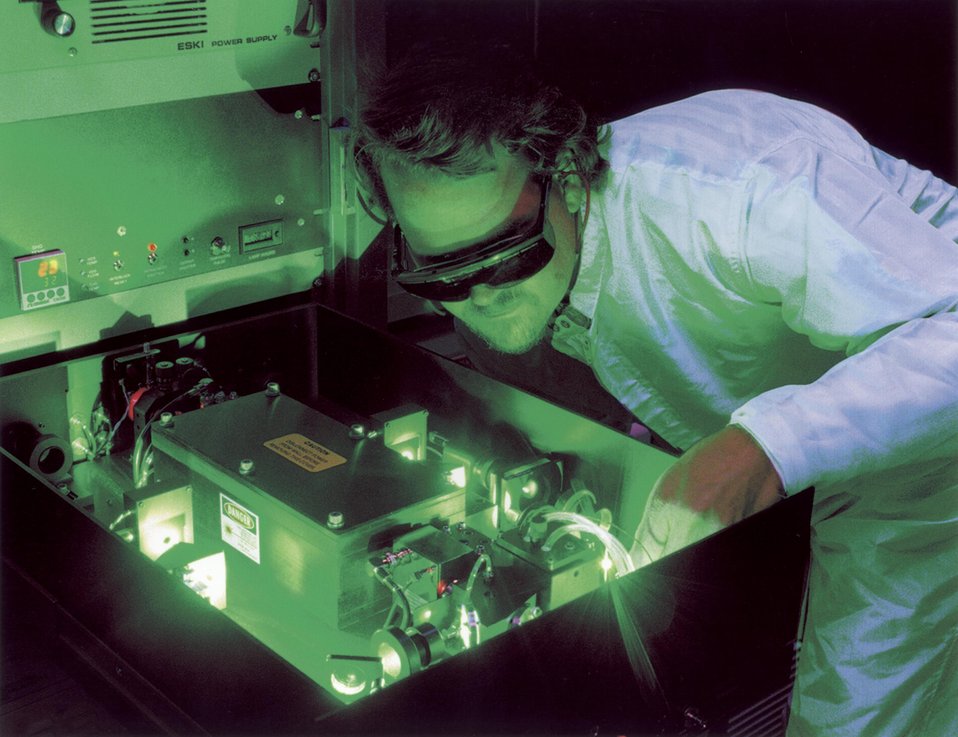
THE INTRODUCTION OF SOLID STATE LASERS ENERGIZE THE DYE LASERS WITH GREEN LIGHT.

A DESIRED ISOTOPE OF A CHEMICAL ELEMENT MUST BE SEPARATED FROM THE REMAINING ISOTOPES, FOR USES RANGING FROM MEDICINE TO ENERGY TO WEAPONS APPLICATIONS. LLNL DEVELOPED AN EFFICIENT TECHNIQUE CALLED ATOMIC VAPOR LASER ISOTOPE SEPARATION (AVLIS), BASED ON THE FACT THAT DIFFERENT ISOTOPES OF THE SAME ELEMENT, WHILE ELECTRONICALLY IDENTICAL, HAVE DIFFERENT ELECTRONIC ENERGIES AND THEREFORE ABSORB DIFFERENT COLORS OF LASER LIGHT.